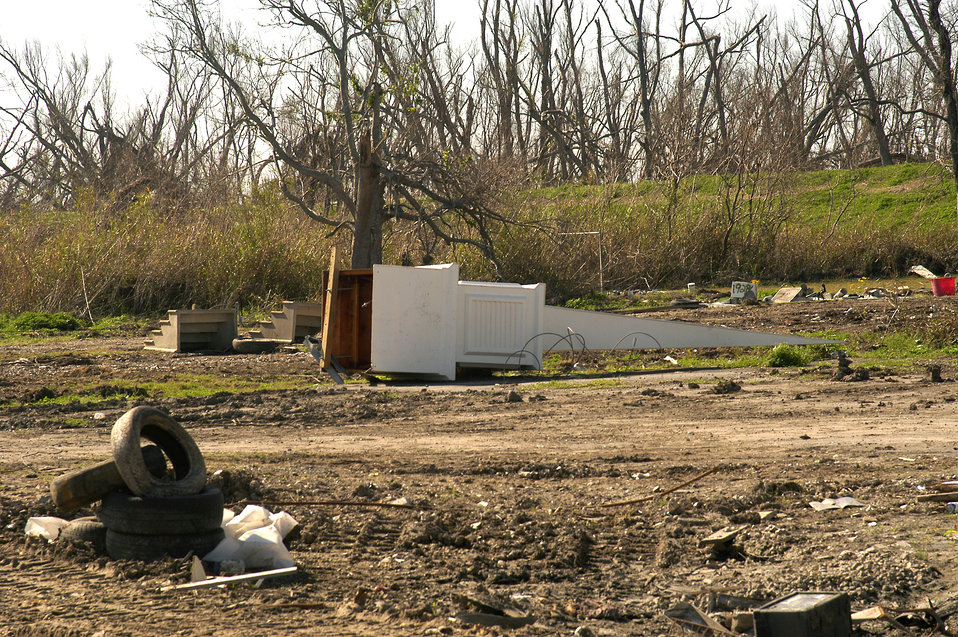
The steeple from a chapel is all that remains of a small town in Plaquemines Parish, LA, after hurricane Katrina’s rampage. Katrina made landfall on Monday morning, August 29, 2005 as a Category 3 hurricane with sustained winds of 125/mph with over a 20-foot storm surge. Katrina caused catastrophic damage over 90 thousand square miles across Louisiana with an estimated $75 billion dollars in damage. The total economic impact to the Gulf Coast was estimated at over $150 billion. 80% of New Orleans, LA, was underwater with some areas more than 20 feet deep. Less than a month later southern Louisiana was struck by a second Category 3 hurricane Rita inflicting more damage in the southwestern areas of Louisiana adding an addition $12 billion worth of damage to the already beleaguered state. The U. S. Army Corps of Engineers (USACE) under the auspices of Federal Emergency Management Agency (FEMA) was the lead service in providing assistance to the citizens of Louisiana. The U. S. Department of Agriculture (USDA) supplied emergency food aid, emergency loan assistance to farmers and home owners, and USDA personnel from around the nation volunteered their time and muscle to aid in the recovery operations.